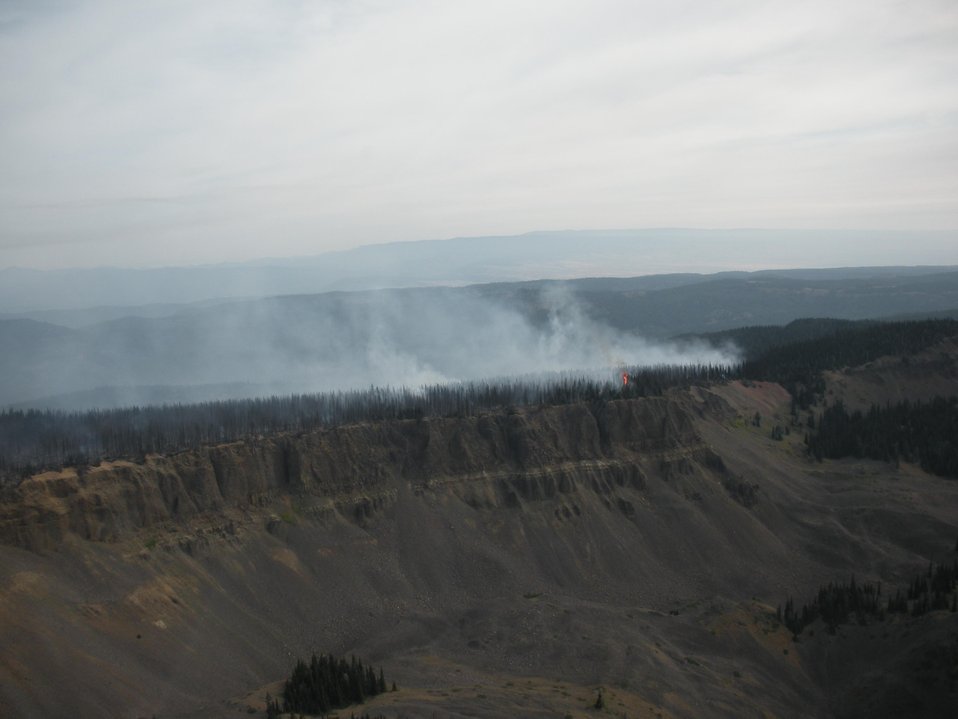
The Manastash Ridge Fire in the Wenatchee National Forest near in Cle Elum, WA began on Aug. 9, 2013 began by lightning has consumed approximately 2,352 acres and is 40% contained.